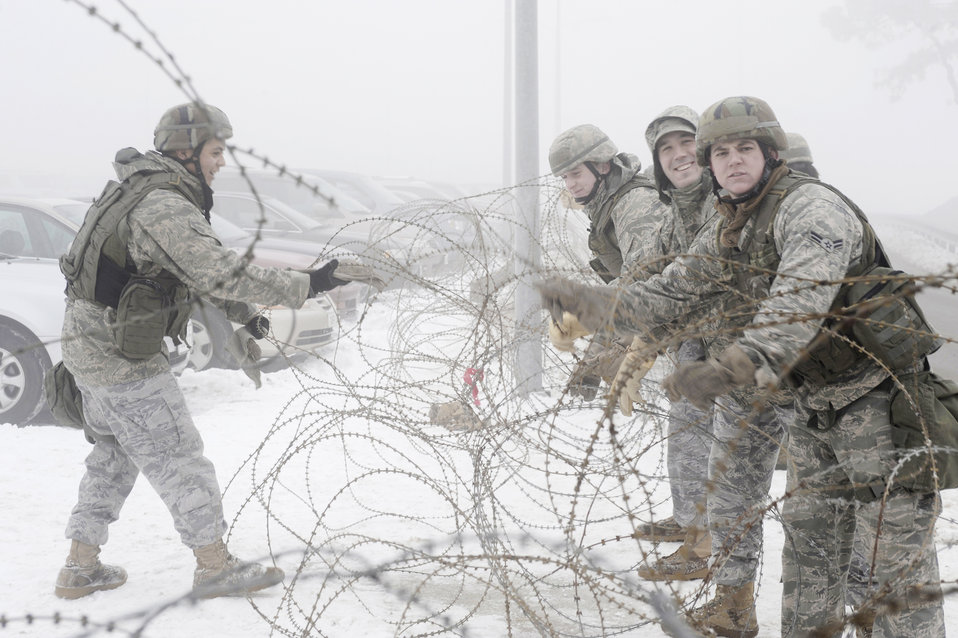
No one gets past here

Airmen from the 51st Security Forces Squadron set up barbed wire along roads and buildings in preparation for an exercise at Osan Air Base, South Korea, Jan. 11, 2010.